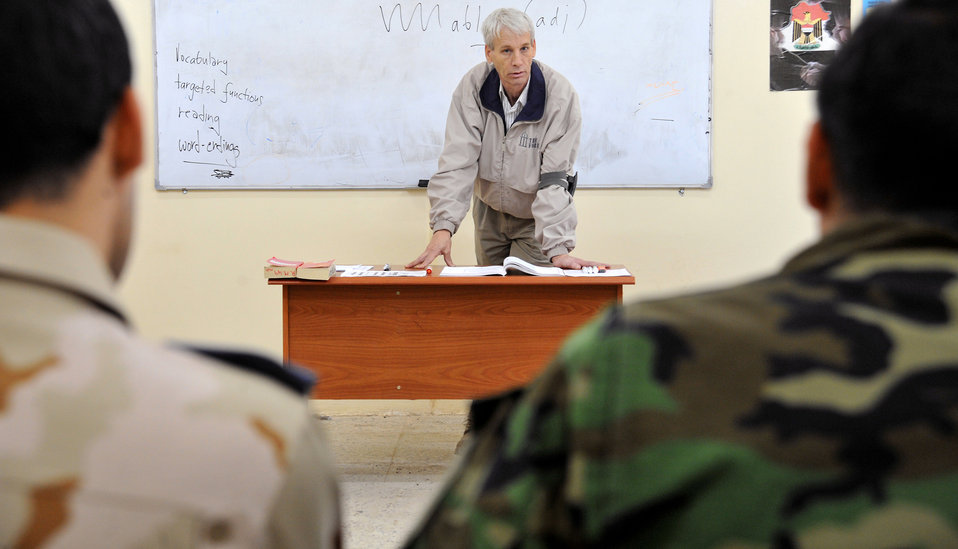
Iraqi Air Force Core Values

Arthur Nova teaches an advanced English language course to a class of Iraqi airmen Dec. 13, 2010, in Taji, Iraq. While air advisers work with the faculty to help them improve the way the overall program is run, it is the 19 U.S. contractors and lone Defense Language Institute civilian who work face-to-face with the students. Mr. Nova is an instructor at the Iraqi Air Force Training School.